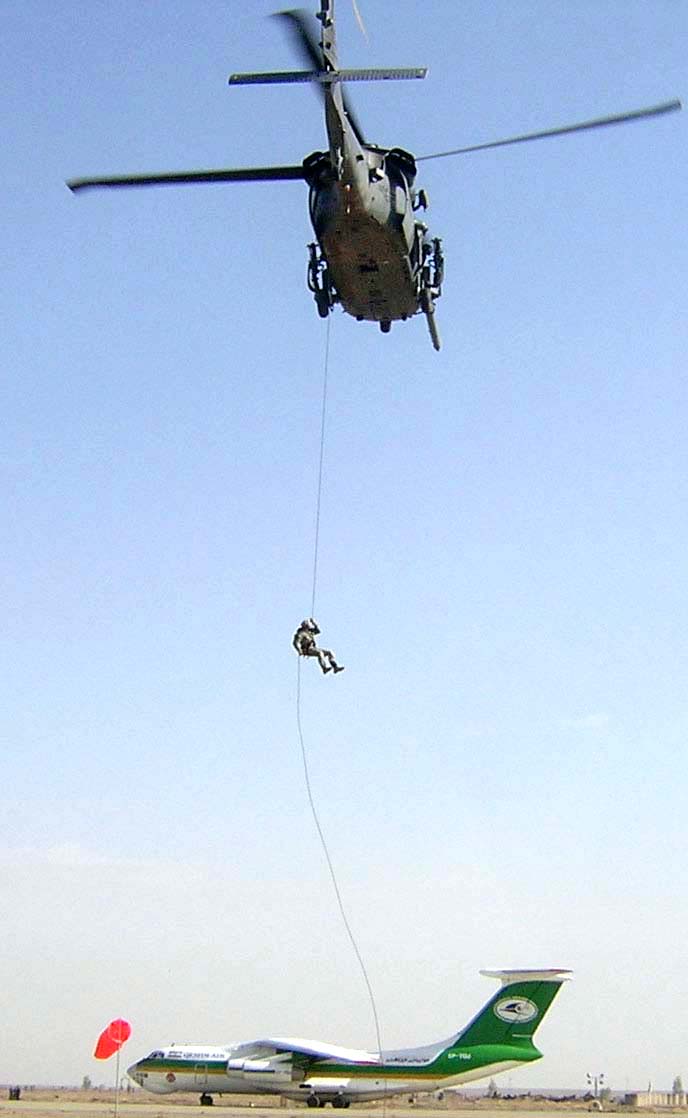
Kandahar pararescuemen poised to save lives

KANDAHAR AIR BASE, Afghanistan -- Staff Sgt. Tan Sirisak practices rappelling from a helicopter hovering 70 feet above the airfield here. Sergeant Sirisak is a 59th Expeditionary Rescue Squadron pararescuemen.